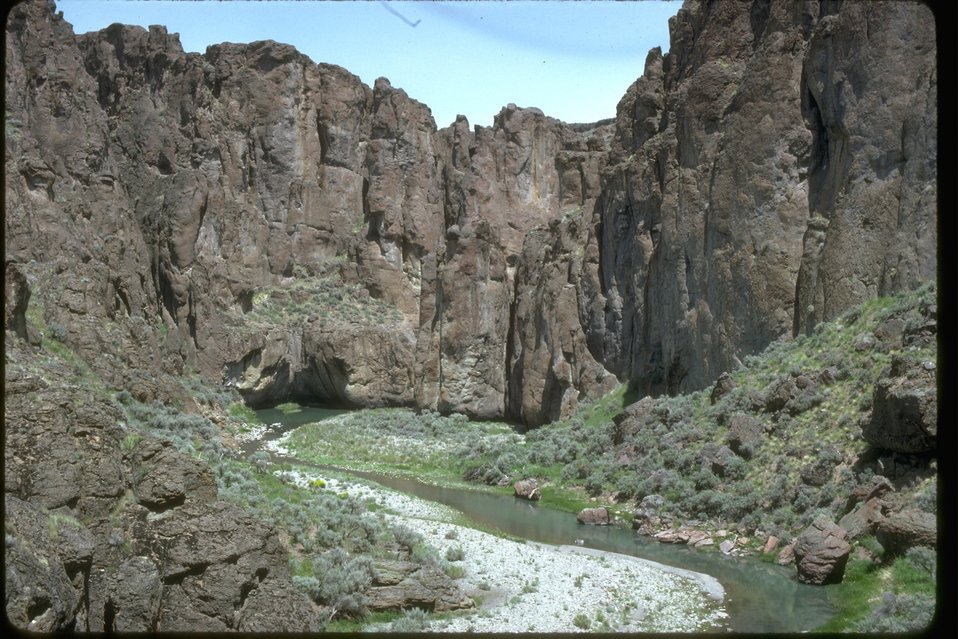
Rocky cliffs in the Upper West Little Owyhee Wilderness Study Area. OR 3-173